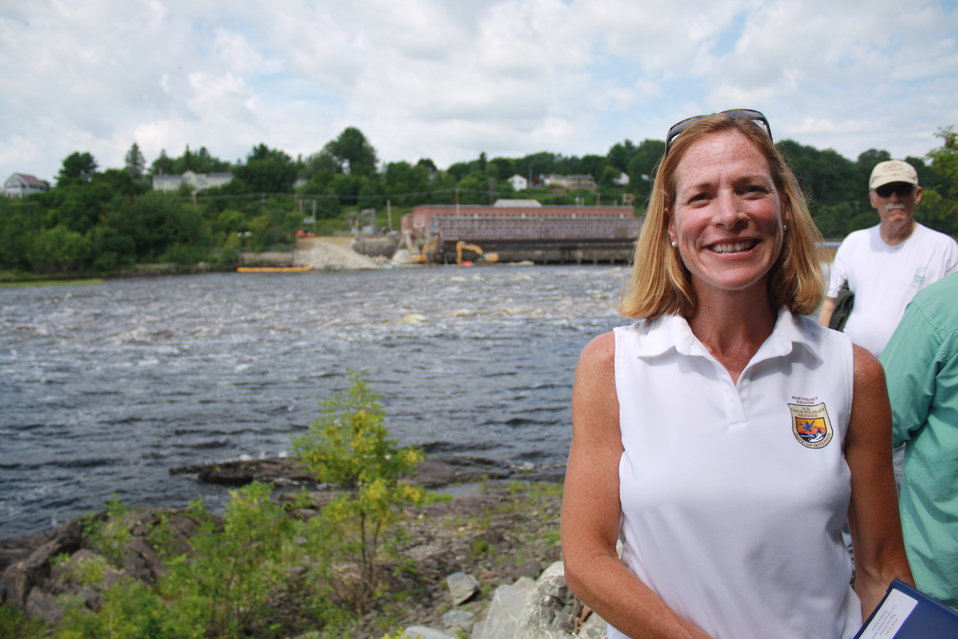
Veazie Dam Removal

Wendi Weber, U.S. Fish and Wildlife Service Northeast Regional Director.